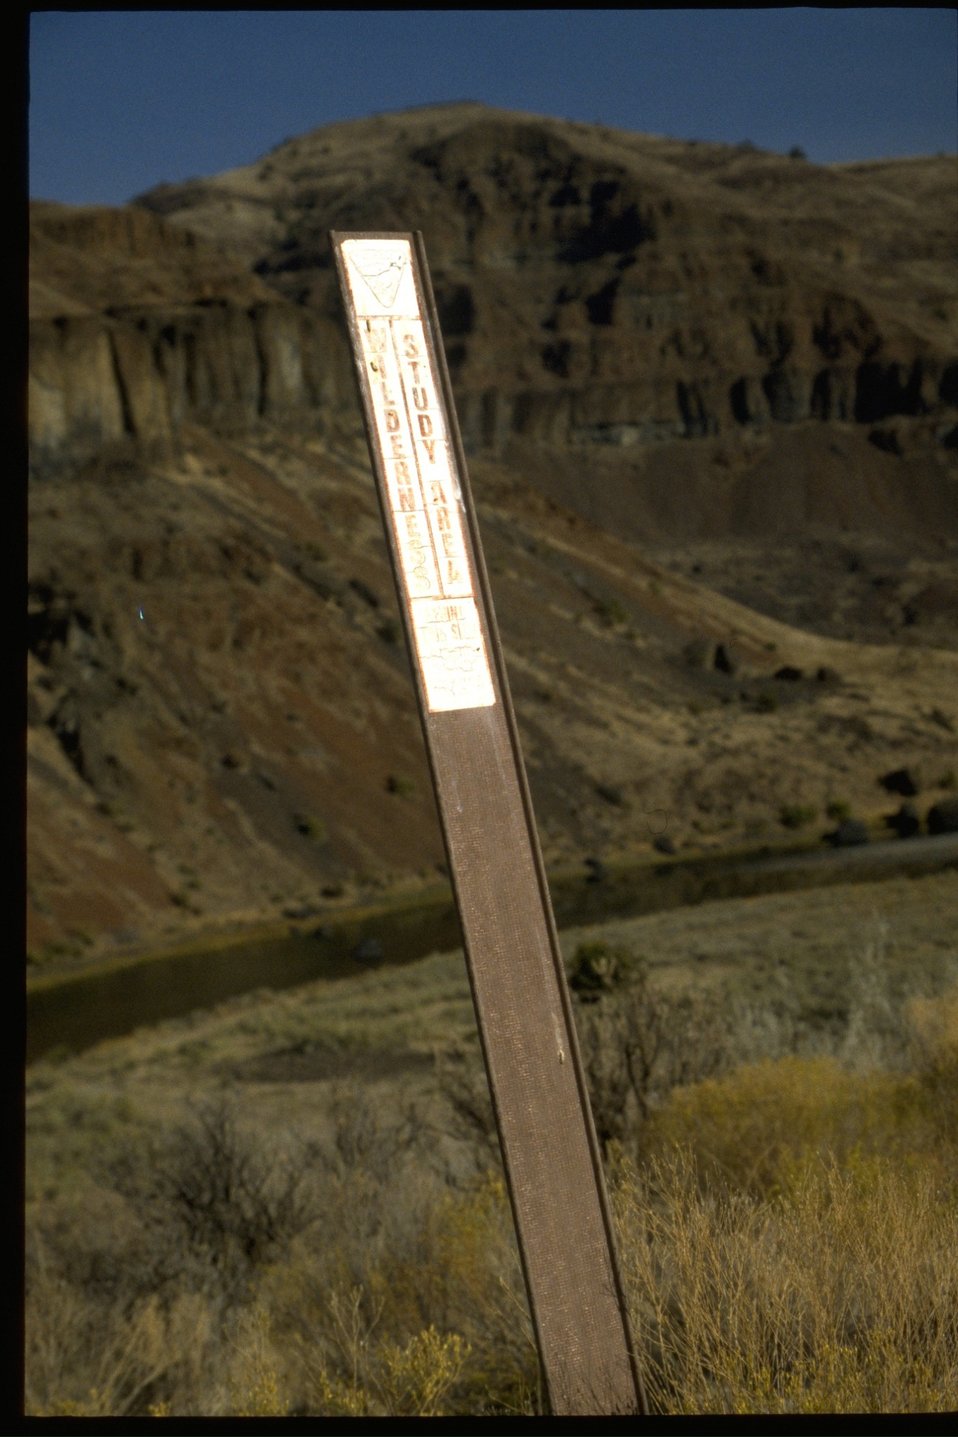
Carsinite sign designating a Wilderness Study Area with the John Day River and basalt cliffs in the background.